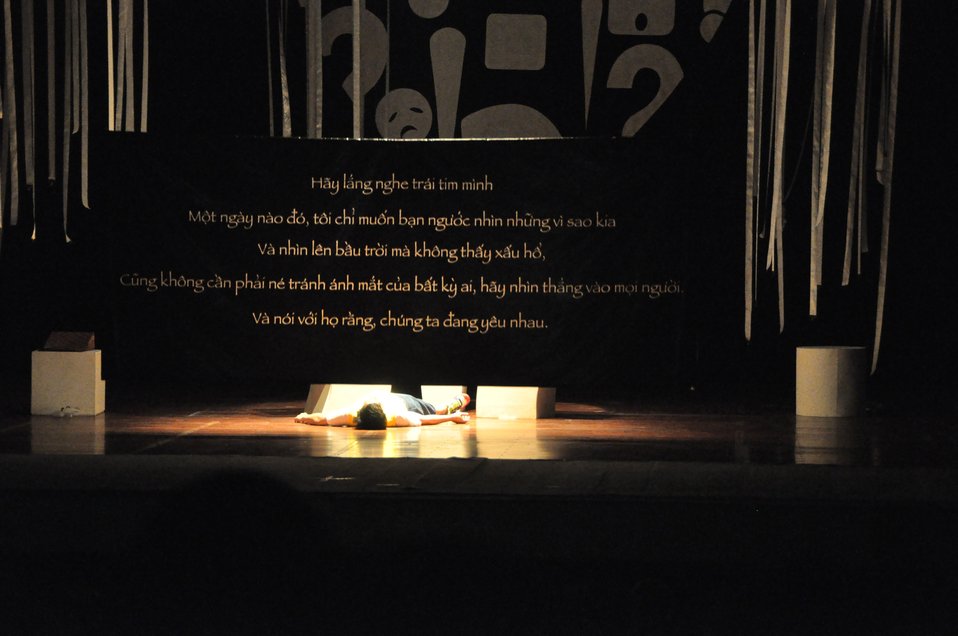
PEPFAR Musical Questions and Exclamations

Hanoi, May 17, 2013